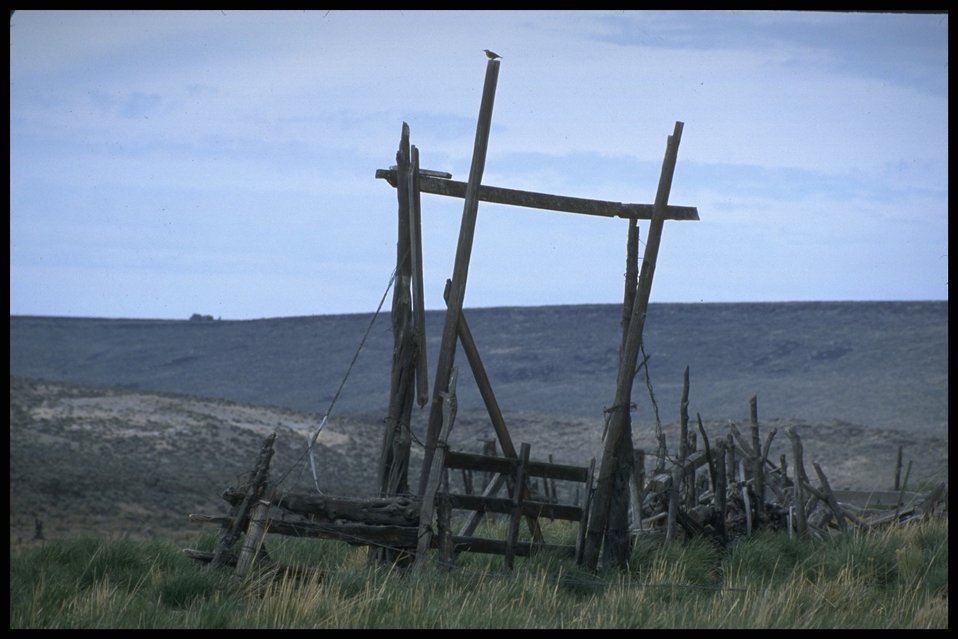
Old corral at Shirk Ranch, Lakeview District.